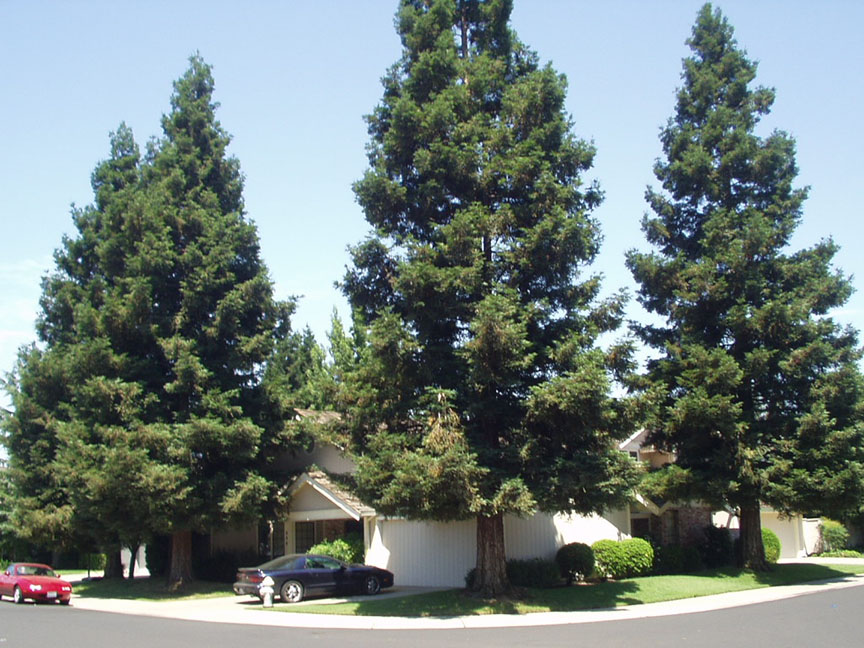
House; Trees